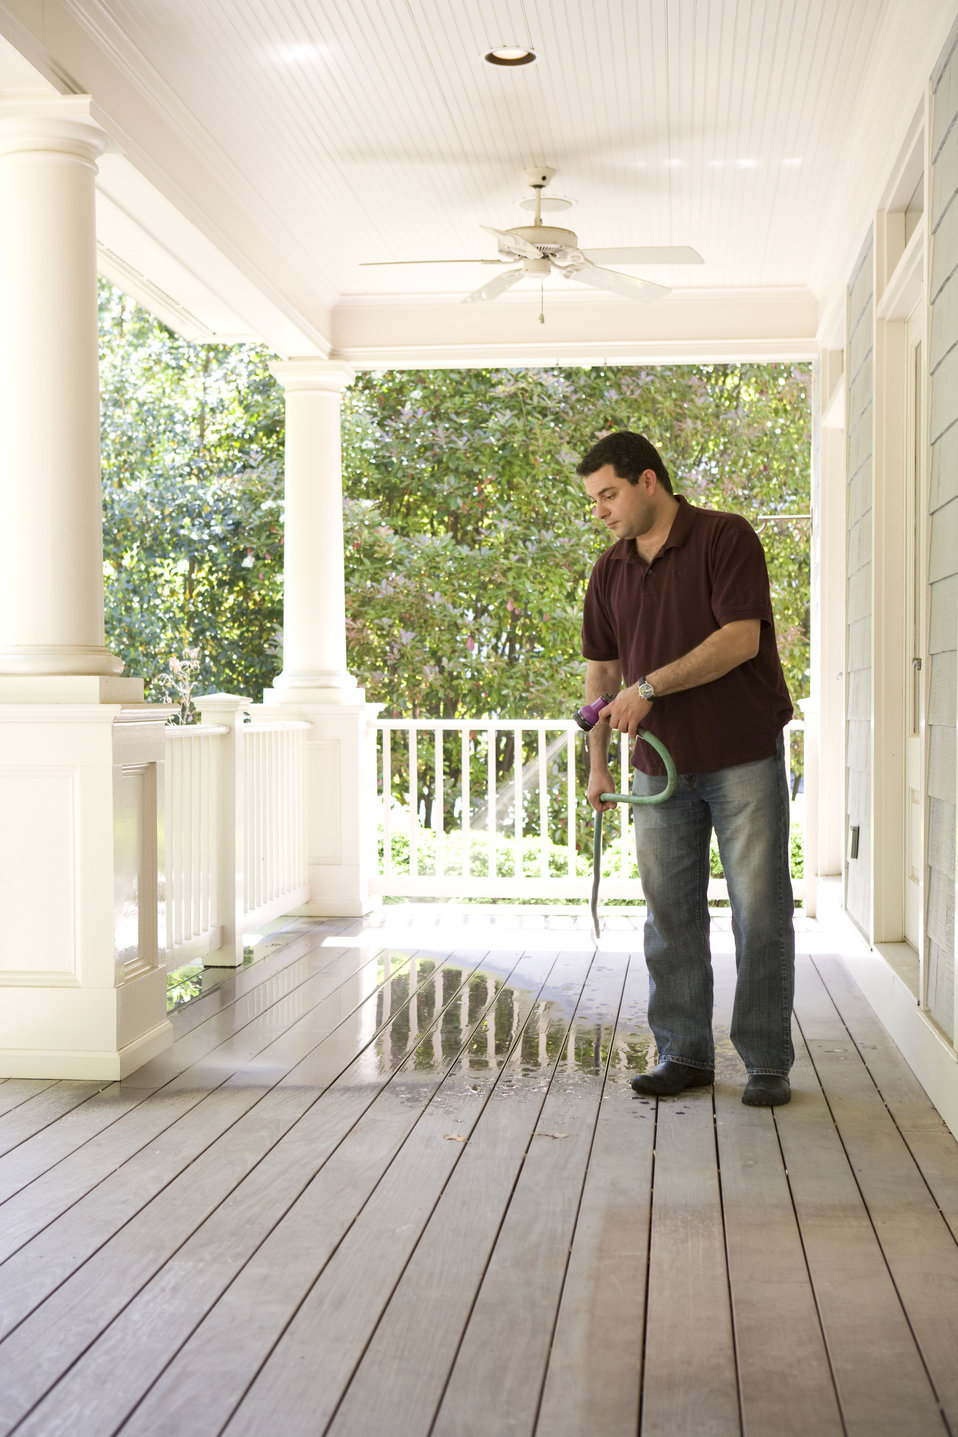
Home maintenance includes both the indoor, and as was the case here, outdoor environment, and is an ongoing process with which a homeowner need to keep up in order to provide for a healthy living space. Keeping your porch dust-free reduces the amount of contaminants tracked into the house.This man was in the process of cleaning his home's porch using a broom, as well as a water hose. In this way, airborne particulates including dust and pollen, could be removed from this area of his home, reducing the detrimental effects upon his family's respiratory systems. These irritants can sometimes result in sinus infections, and asthma.